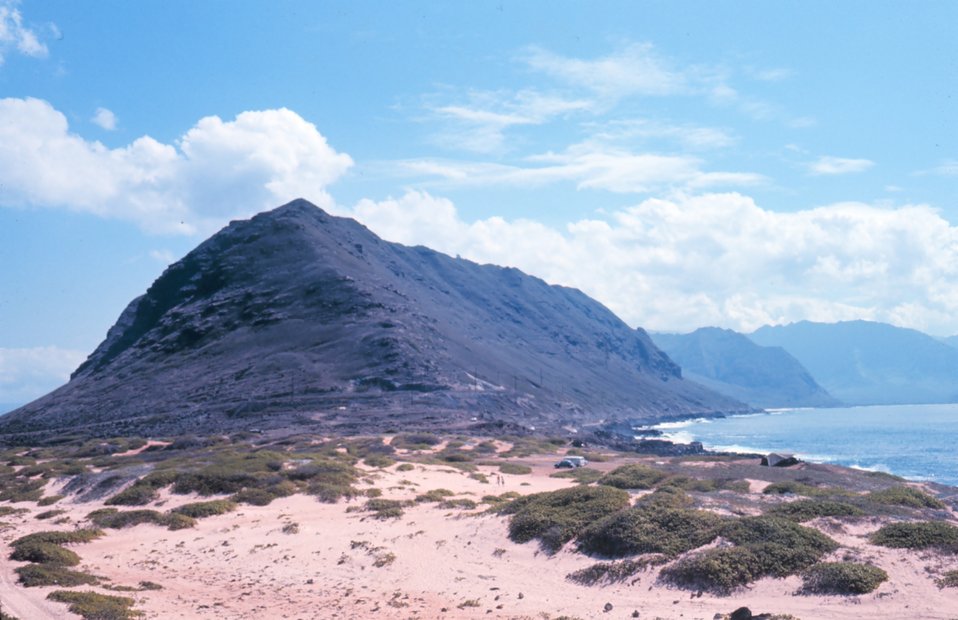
Waianae coast -southwest Oahu